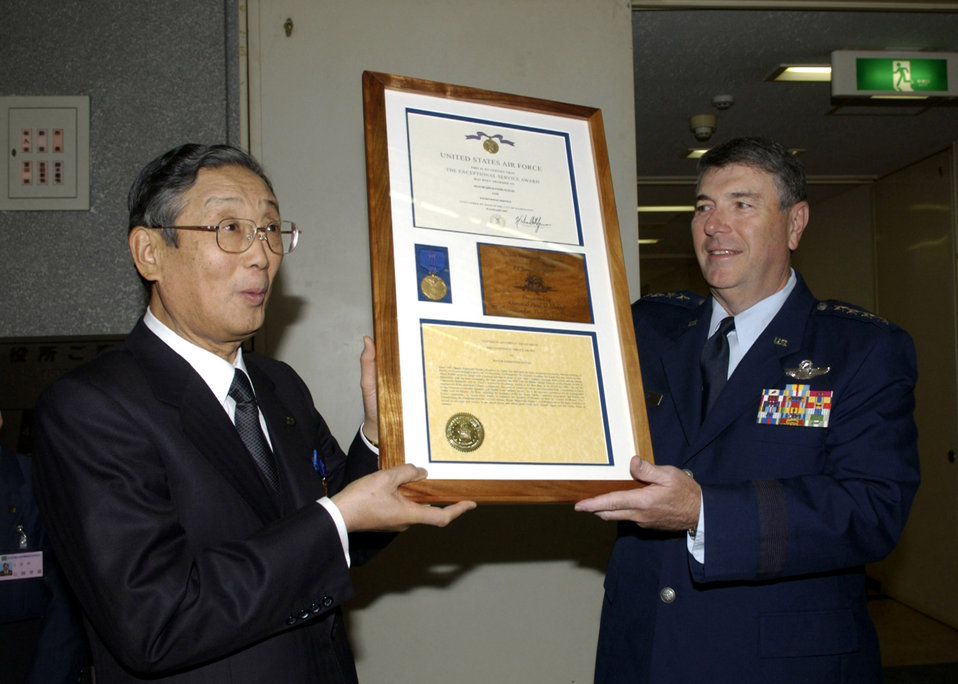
Champion for U.S.-Japan relations dies at age 66

Gen. Paul V. Hester presents the Air Force Exemplary Civilian Service award to Misawa City Mayor Shigeyoshi Suzuki Jan. 31 in Misawa City, Japan. It was the first time a Japanese official was presented with an Air Force-level award. General Hester is the Pacific Air Forces commander. Mayor Suzuki, a longtime friend and supporter of American servicemembers, their families and the Air Force mission in Northern Japan, passed away May 1 from pneumonia at the age of 66. Mayor Suzuki served as mayor of Misawa City, representing a city of 40,000, for more than two decades and was in his sixth term upon his death. Throughout his years as mayor, he laid the foundation for strong relations between the base and the local area.